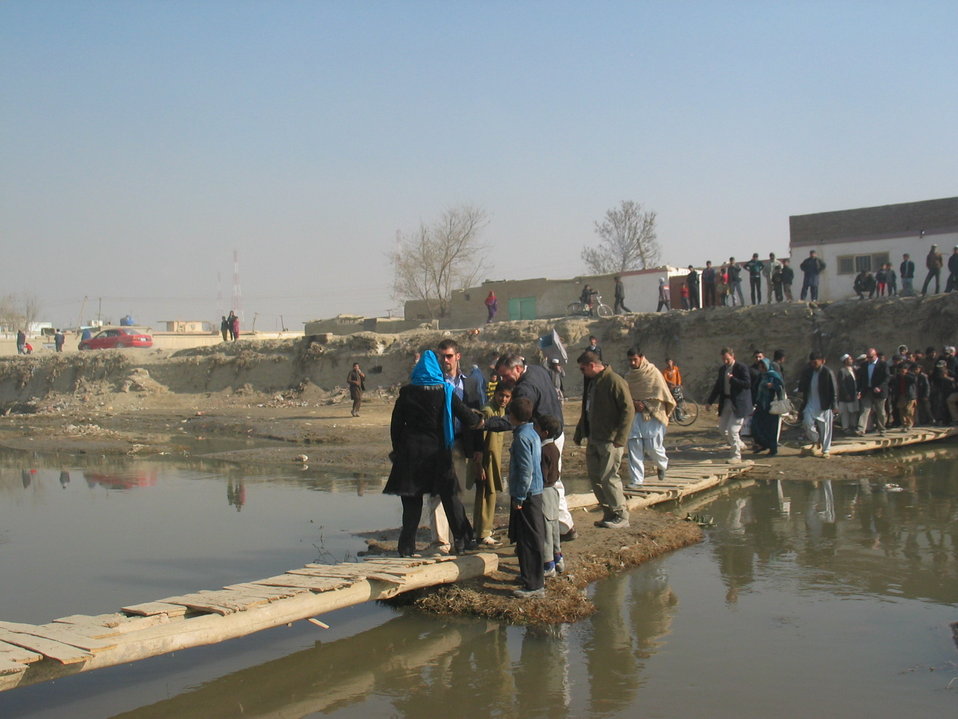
Kabul River Bridge Renovation, December 3, 2010